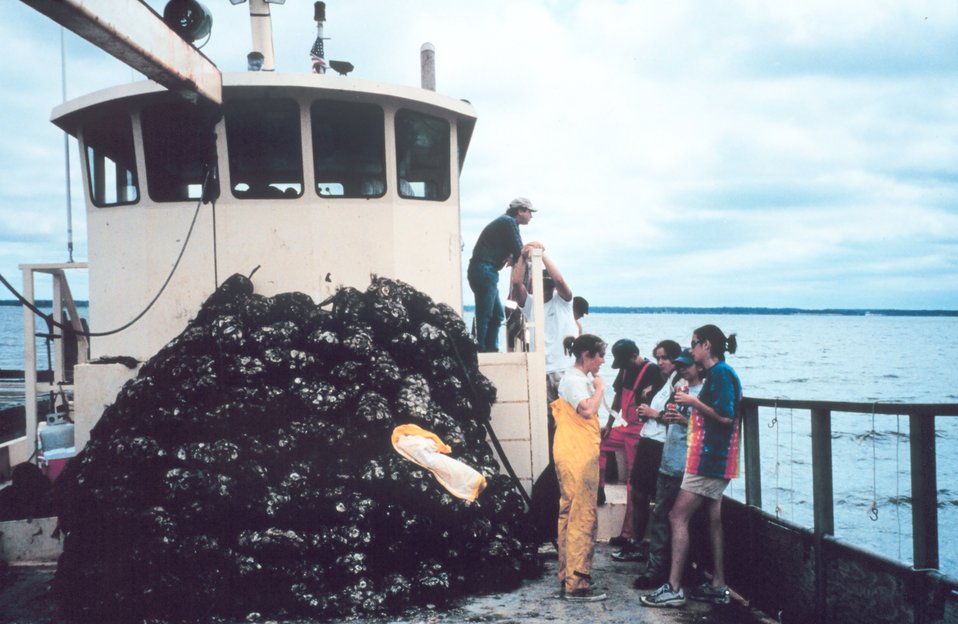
Volunteers assist the Oyster Recovery Partnership in their effort to transplant oyster spat before the population is decimated by the Stylochus flatworm. Hatchery bags are stacked aboard the ROBERT LEE.